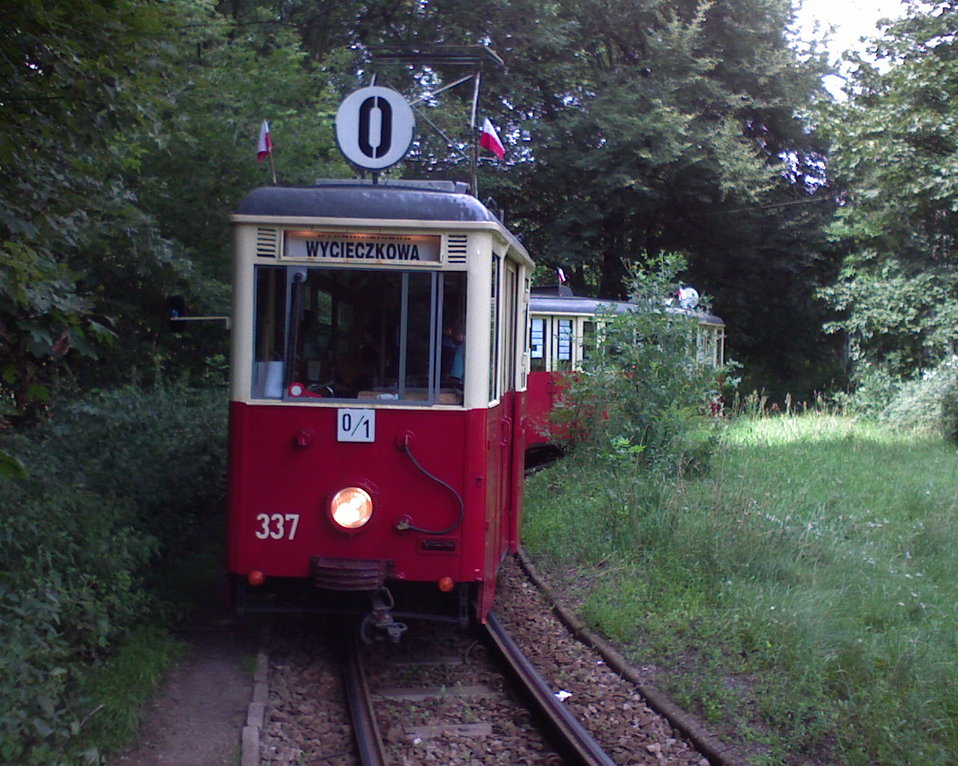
Front view of the '0' line tram (#337) in Łódź, Poland.